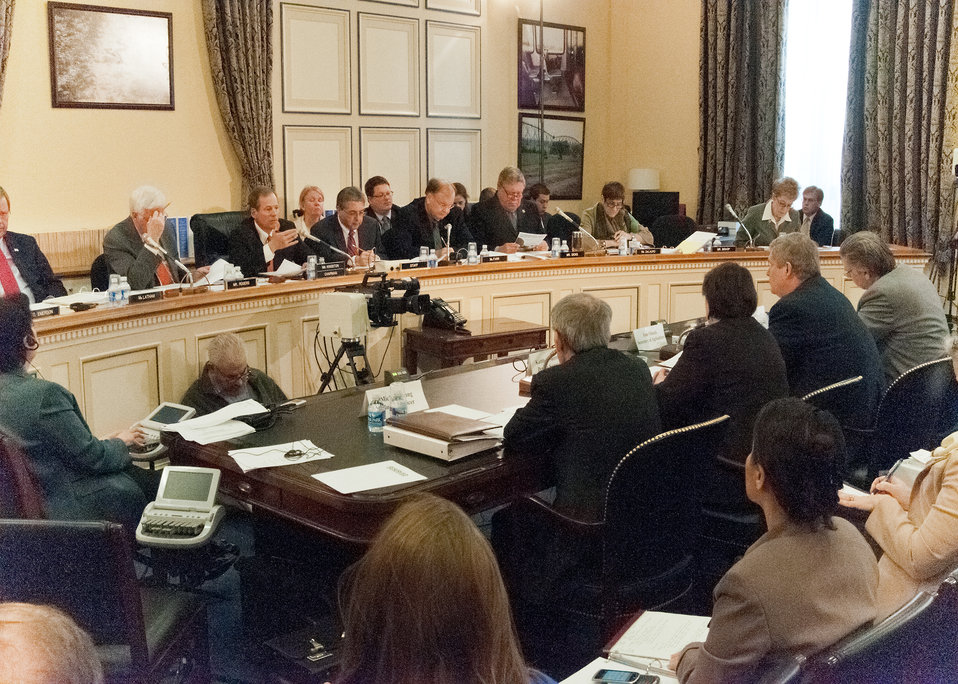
Congressman Jack Kingston, Georgia, Chairman and members of the House Agriculture Appropriations Committee pose questions to Agriculture Secretary Tom Vilsack, Dr. Kathleen Merrigan, Deputy Secretary, Dr. Joseph Glauber, Chief Economist and Michael Young Budget Officer while discussing the United States Department of Agriculture budget in the Rayburn House Office Building on Friday, February 17, 2012 in Washington, D.C.